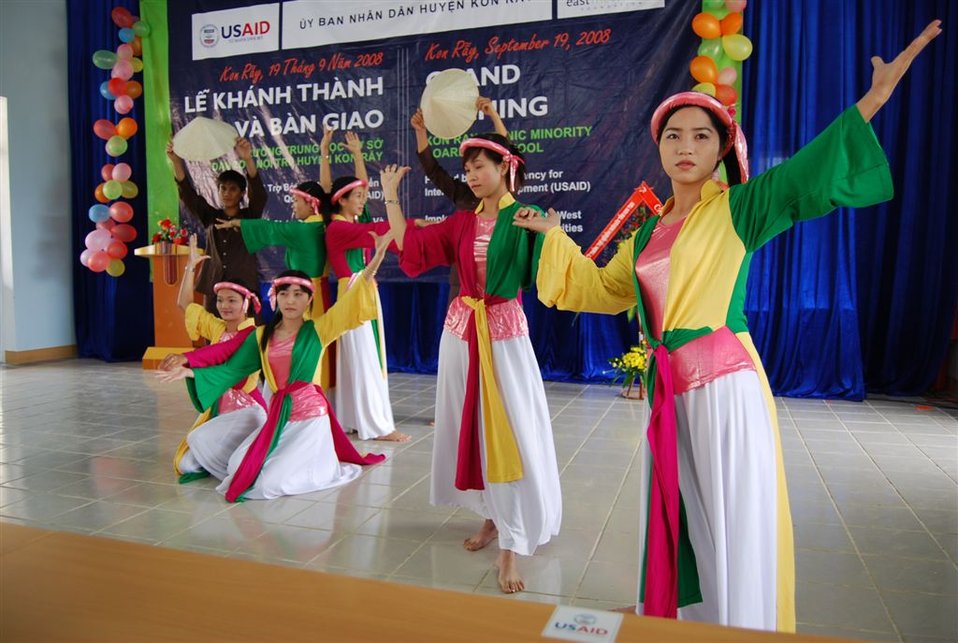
Kon Ray School -- Dancing Teachers